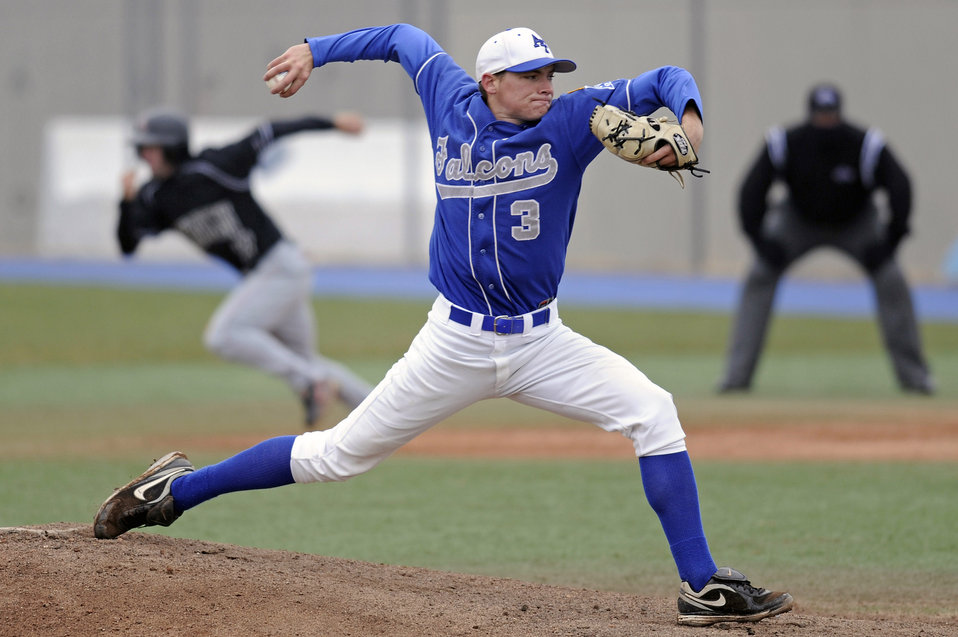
Baseball: Academy battles UNLV, falls 20-13

U.S. Air Force Academy junior pitcher Alex Truesdale delivers a pitch during the 20-13 loss to the University of Nevada, Las Vegas at Falcon Field April 25 at the Academy in Colorado Springs, Colo. The Falcons had 18 hits on the day with three homers, but dropped to a 14-25 overall record, with a Mountain West Conference record of 3-8